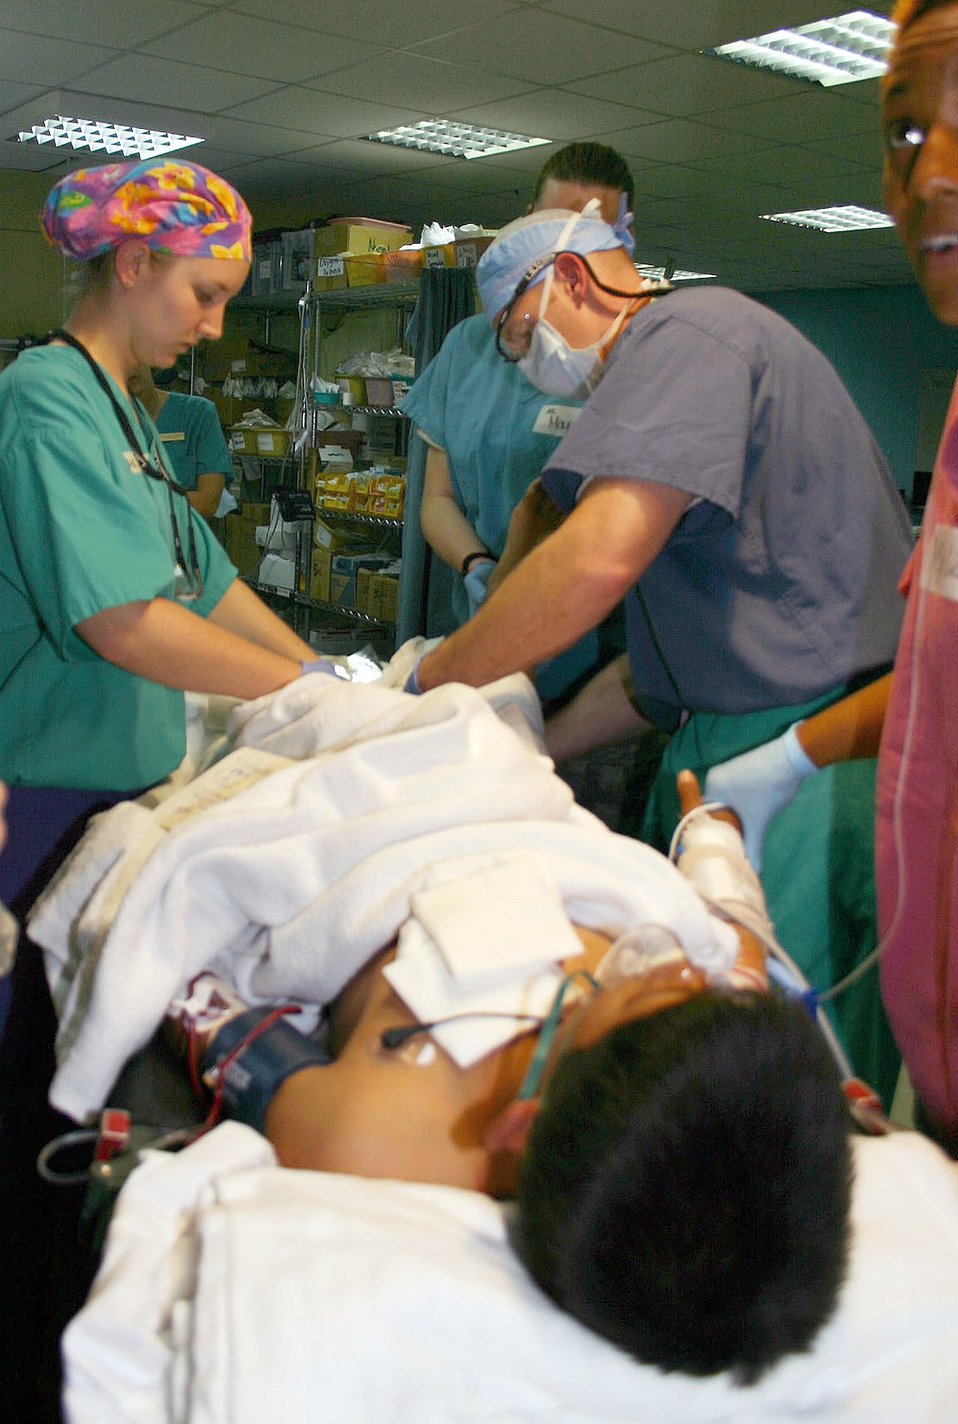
Soldiers, Airmen save Iraqi teen injured by bomb

Army and Air Force doctors treat an Iraqi teenager March 27 at Forward Operating Base Warrior in Kirkuk, Iraq. The boy was injured by an improvised explosive device hidden in his family's field.